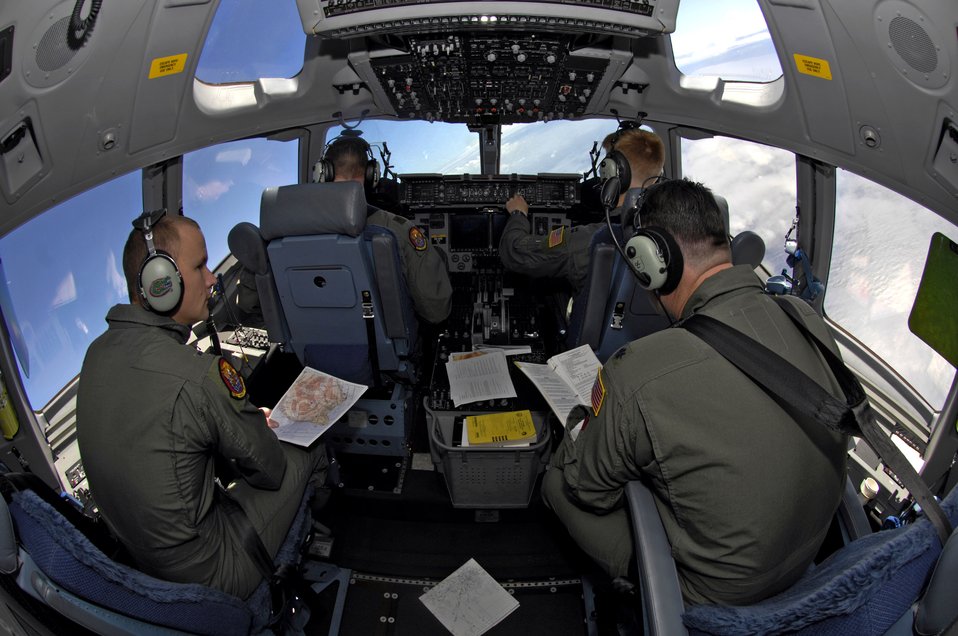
Into the wild blue yonder

Pilots from the 535th Airlift Squadron fly their C-17 Globemaster III during a local training mission Nov. 15 over the Hawaiian Islands.